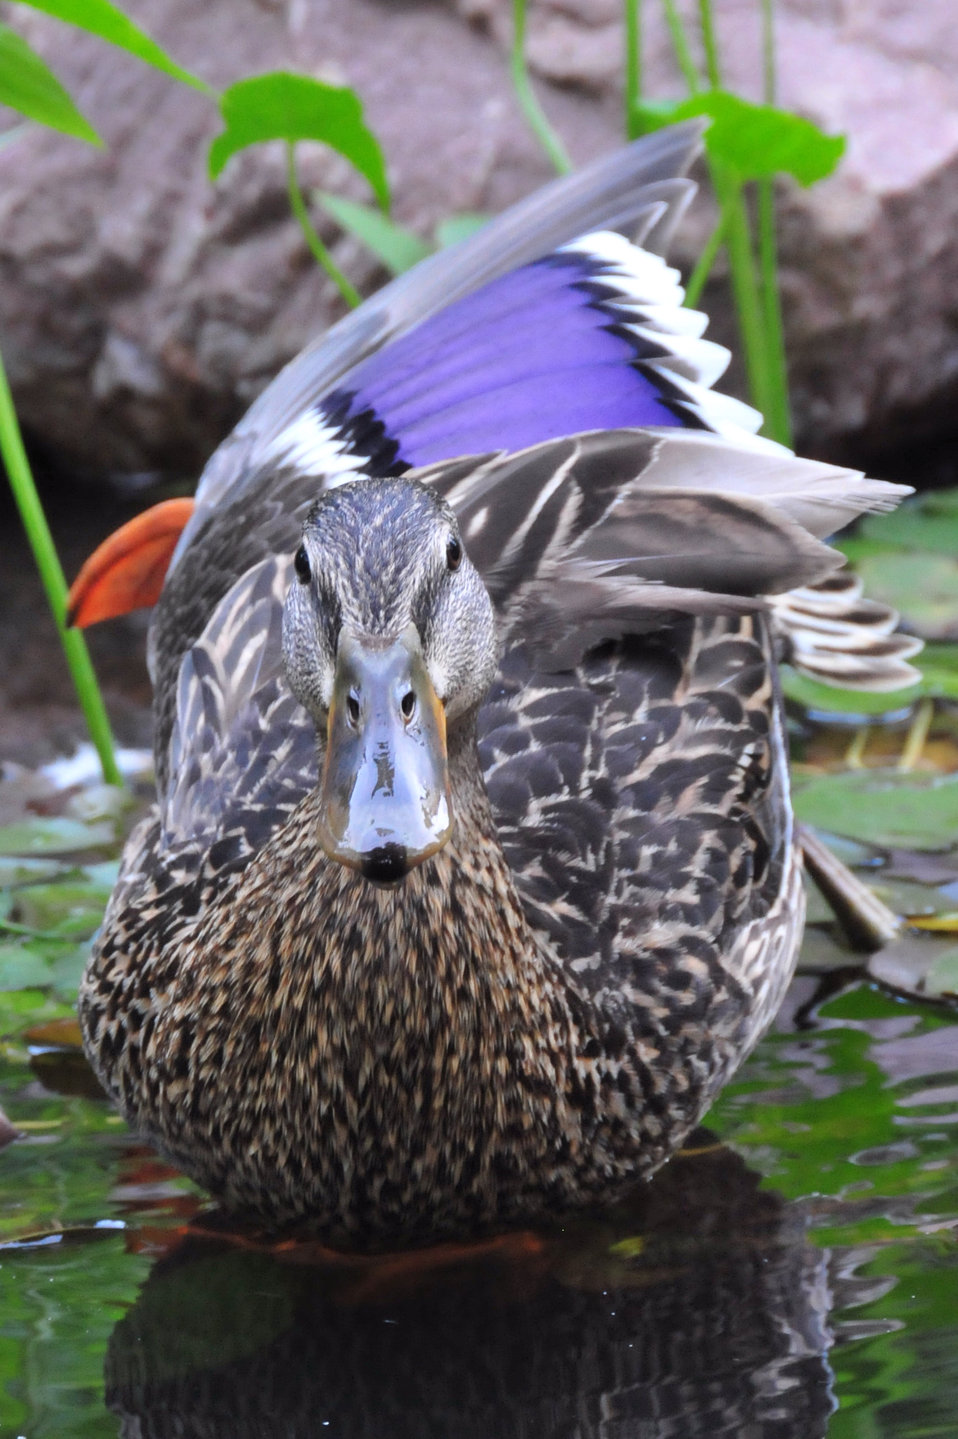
Mallard Hen Preening